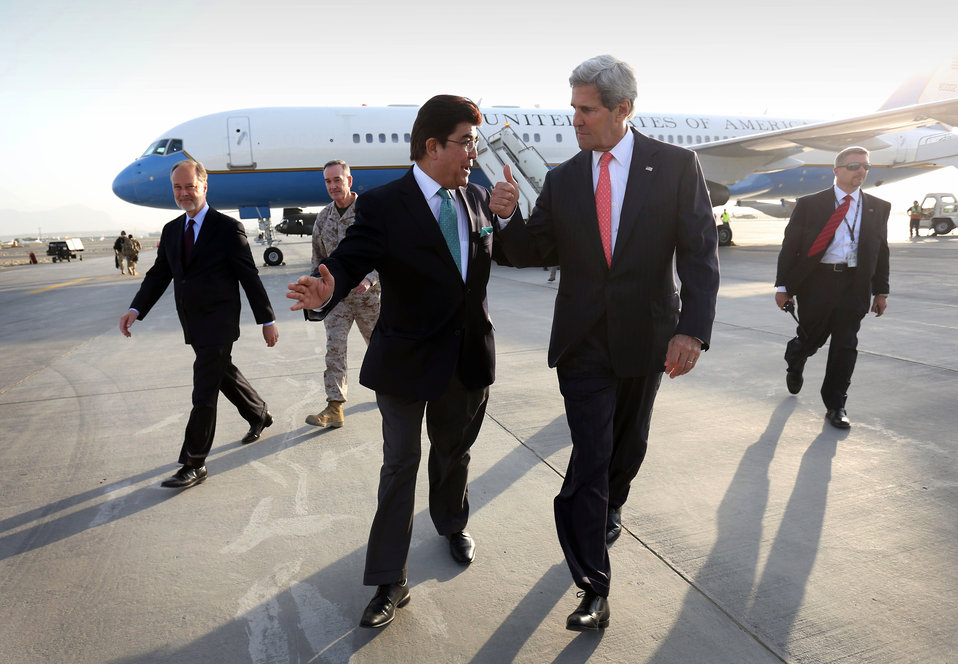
Secretary Kerry Speaks With Afghan Director of Protocol Sidiq

U.S. Secretary of State John Kerry speaks with Hamid Sidiq, Director of Protocol of the Afghan Ministry of Foreign Affairs, upon his arrival in Kabul, Afghanistan, on October 11, 2013.